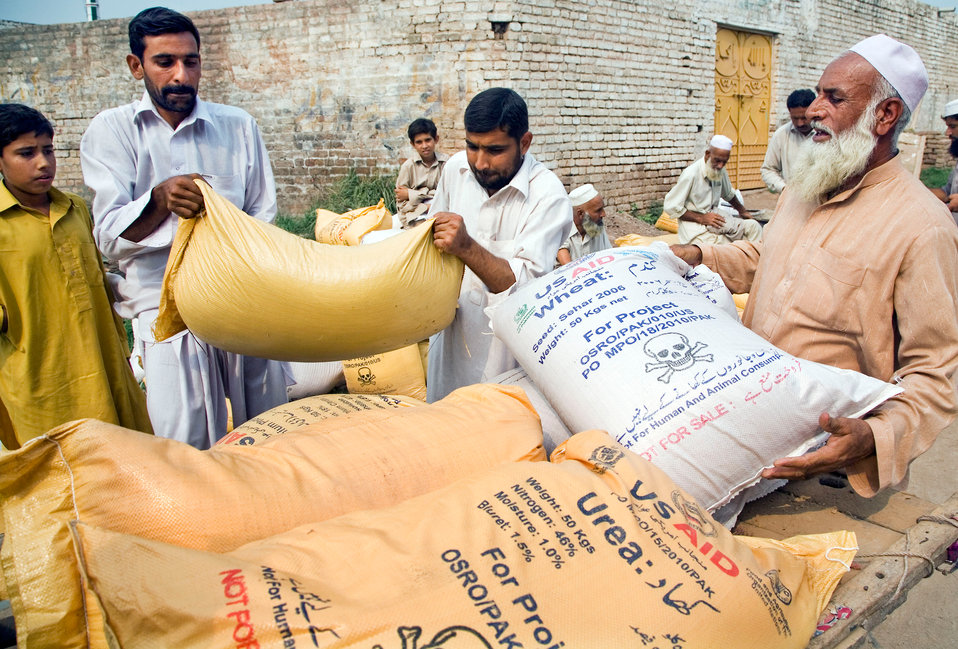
Wheat and Vegetable Seeds

December 3, 2010 - Happy farmers take their 50 kg sacks of wheat and vegetable seeds, as well as fertilizer, back to their family farms in time for the winter wheat season. USAID's $62 million program post-flood wheat distribution program has distributed wheat, vegetable seeds and fertilizer to 167,300 households in Khyber Pakhtunkhwa and 65,000 households (one fourth of the total number) in Punjab.